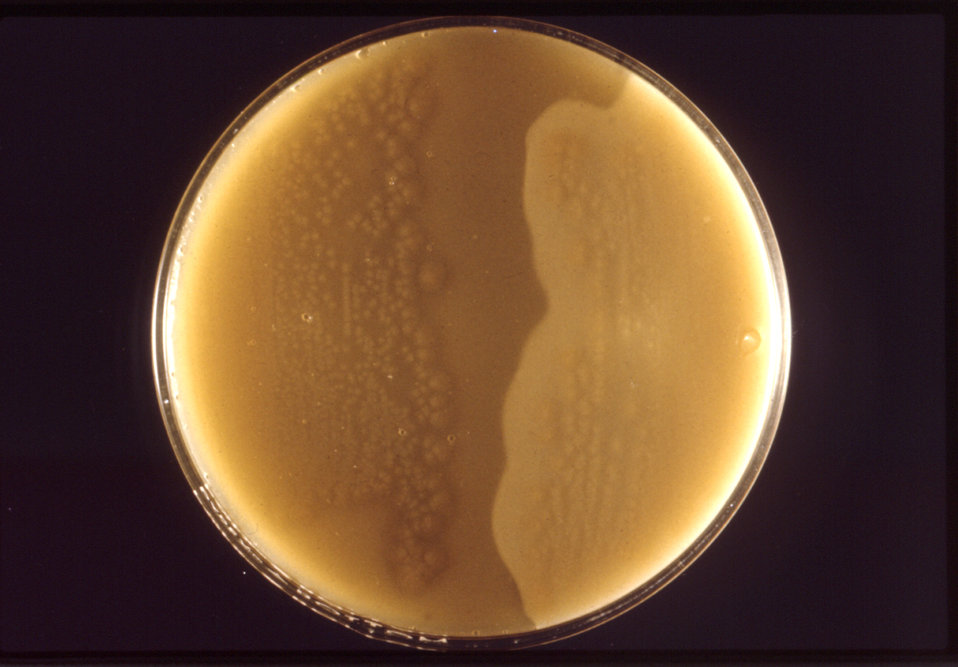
These Clostridium perfringens colonies were cultured on a half-antitoxin plate.